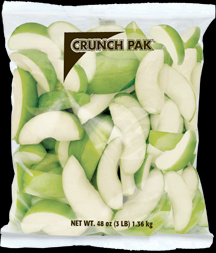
RECALLED – Apple slices

November 14, 2013 – Product Recall – Crunch Pak Issues Voluntary Recall of Limited Quantities of Crunch Pak Brand Apple Slices Because of Possible Health Risk.